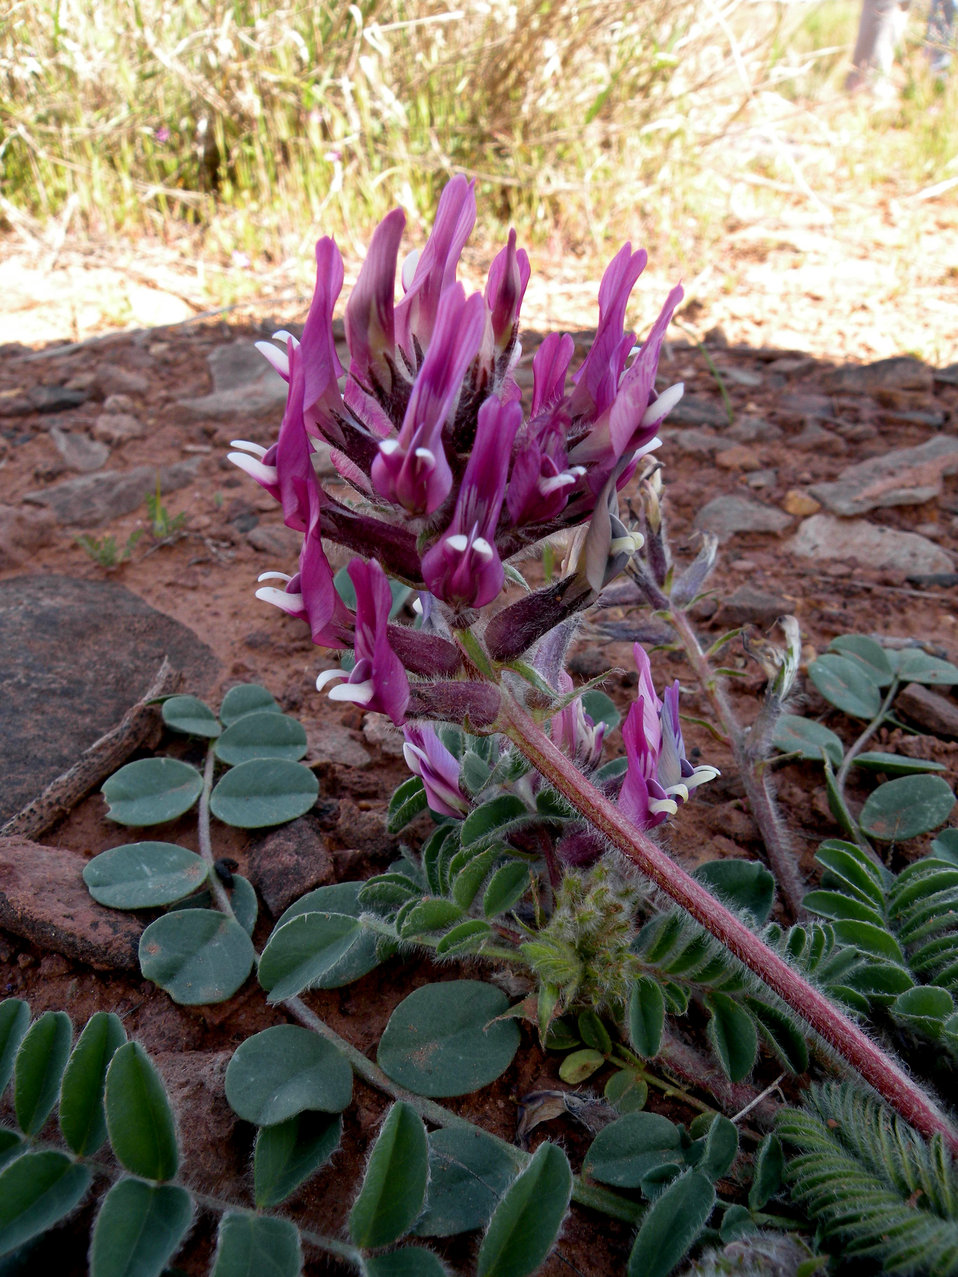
Holmgren milkvetch (Astragalus holmgreniorum)

Holmgren milkvetch is endemic to northern Mohave County in Arizona and to Washington County in SW Utah. It occurs in warm desert shrub communities and grows in Virgin River limestone cobble between 2,700 and 2,800 ft. in elevation. It is listed endangered.